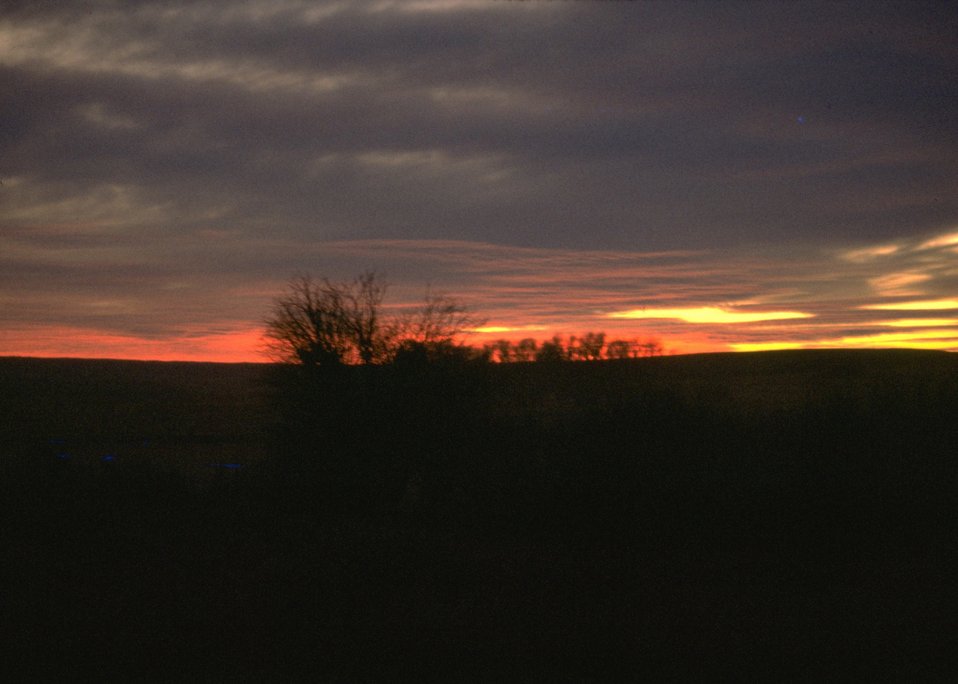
Sunset in Wyoming.